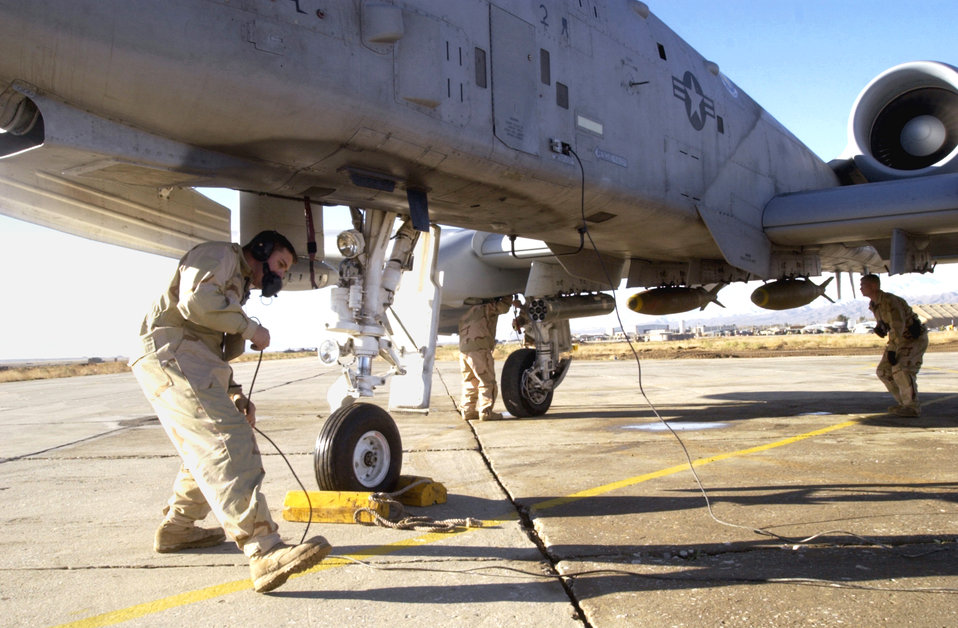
Close-air support

BAGRAM AIR BASE, Afghanistan -- Airman 1st Class Joseph Gumienny ensures an A-10 Thunderbolt II is ready for takeoff here Nov. 17. Airmen of the 354th Expeditionary Fighter Squadron are providing close-air support to the Army's 10th Mountain Division as they pursue Taliban and al-Qaida forces during Operation Mountain Resolve. Gumienny is assigned to Davis-Monthan Air Force Base, Ariz.